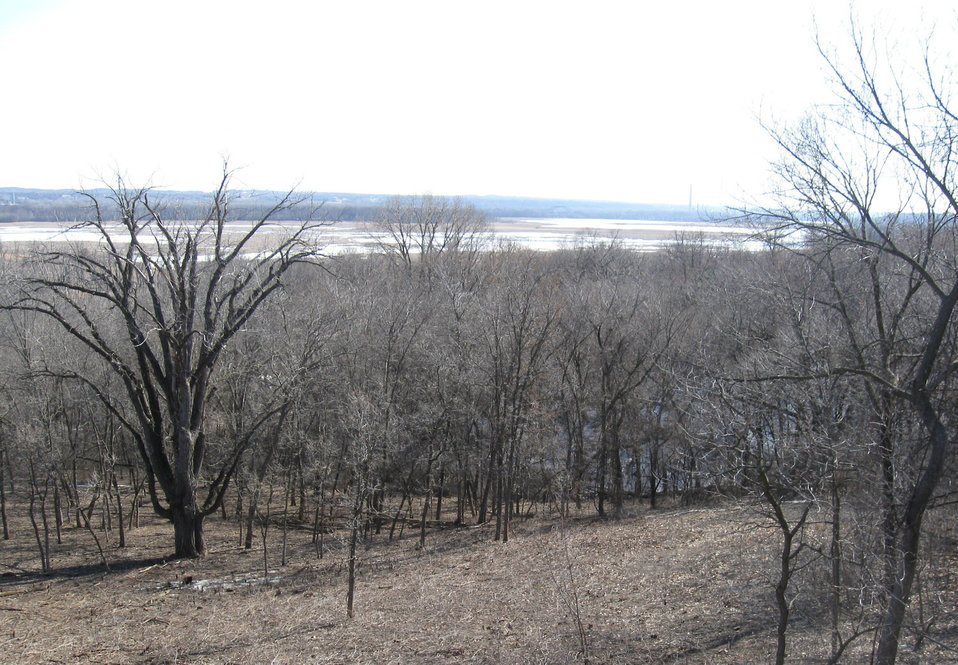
Open Spaces

After: The crew really opened up the area.